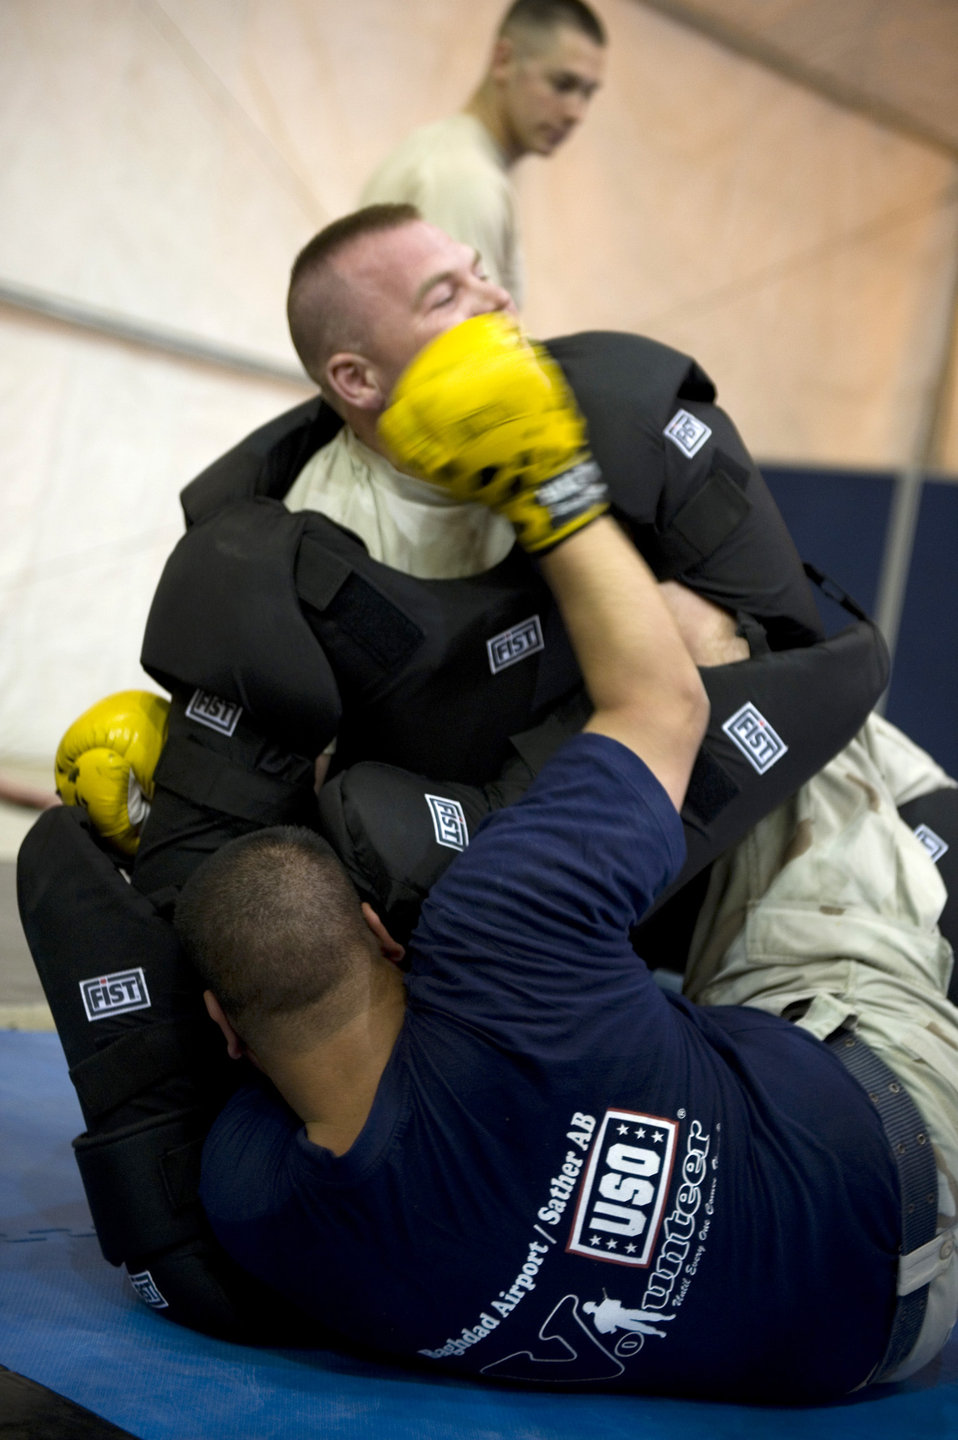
Airmen train Iraqi air force SFS

Staff Sgt. Branden Gallacher (top) grapples with an Iraqi airman April 8, 2011. Members of the 447th Eexpeditionary Security Forces Sqaudron trained Iraqi security forces airmen ensuring weapons qualification and teaching defensive tactics, vehicle searches and other force protection measures. Sergeant Gallacher is assigned to the 447th ESFS.